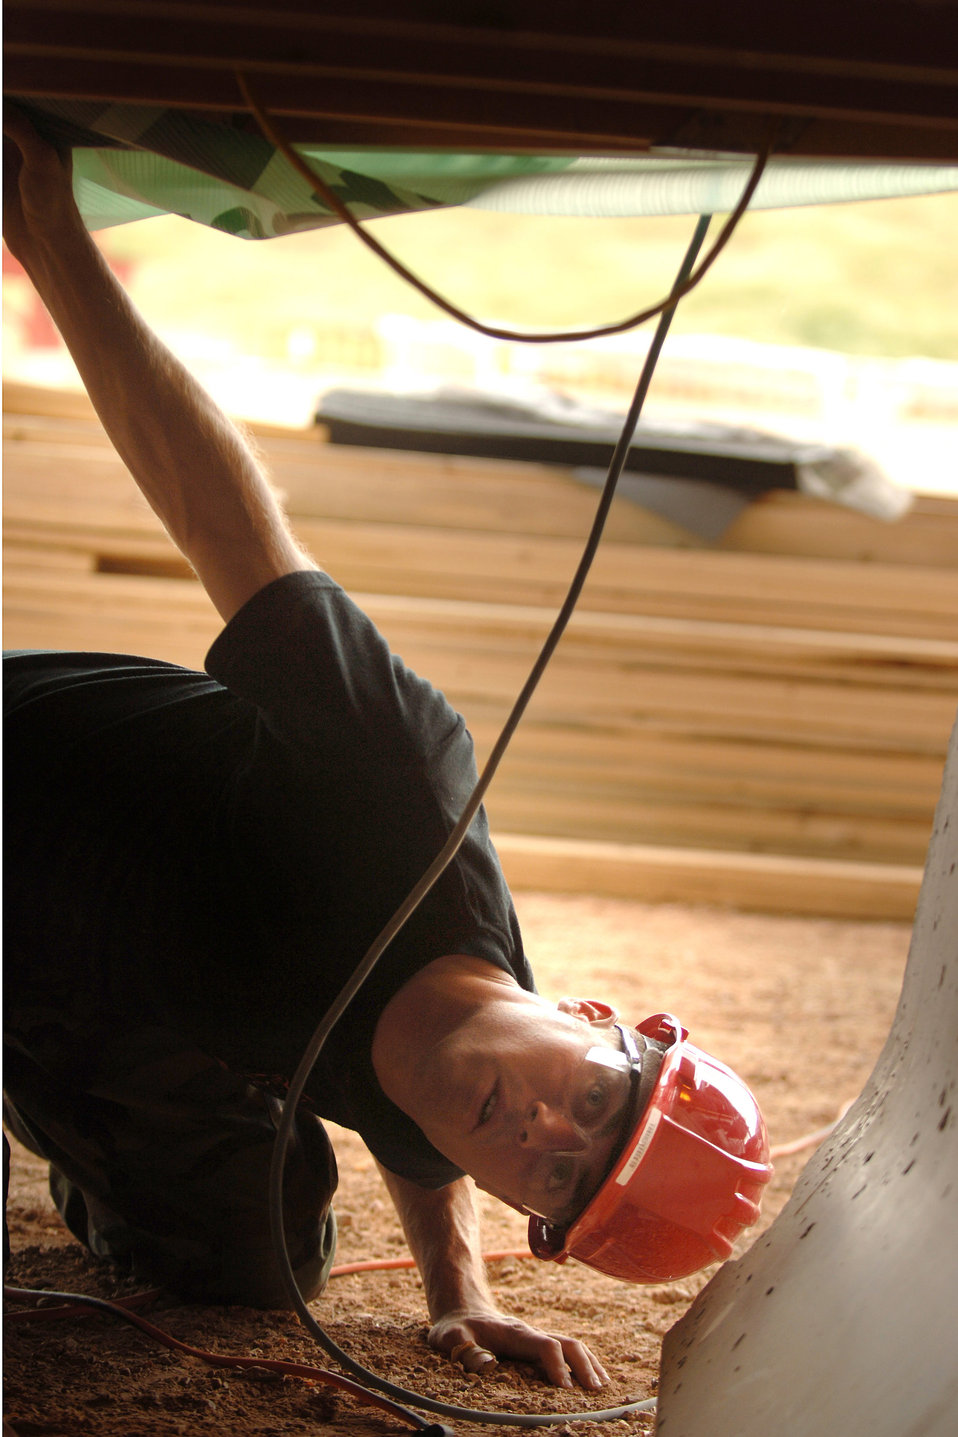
Summer lab gives cadets engineering experience

Air Force Academy Cadet 2nd Class Craig Francke checks the routing of electrical cable under a house cadets are building during the Field Engineering and Readiness Laboratory field course at the Academy. The course exposes cadets to several aspects of civil engineering, including heavy equipment operation, steel bridge construction, designing and pouring concrete beams and paving portions of a road.